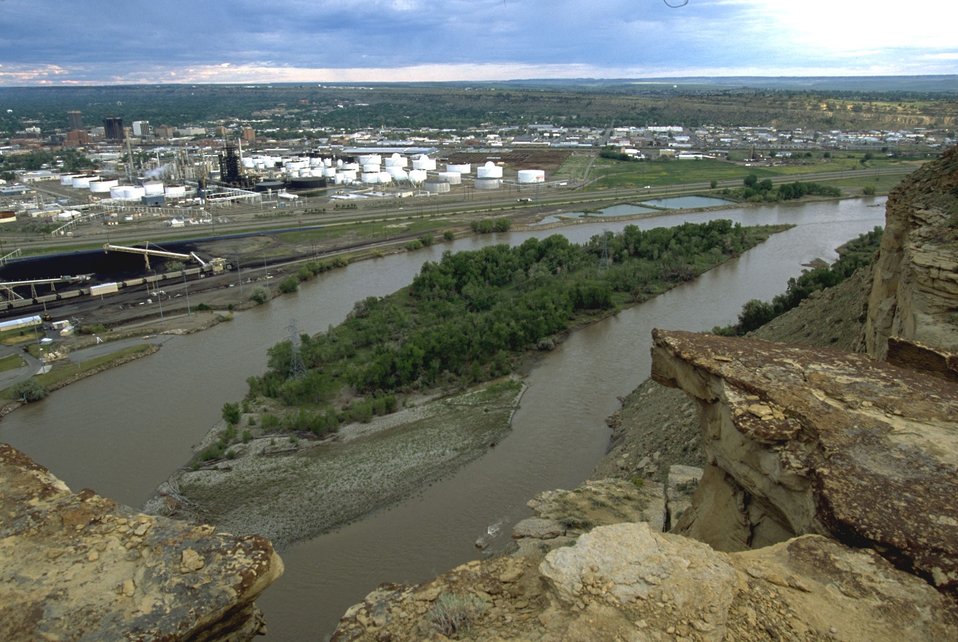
Yellowstone River taken from the middle of the rimrocks, overlooking the island area